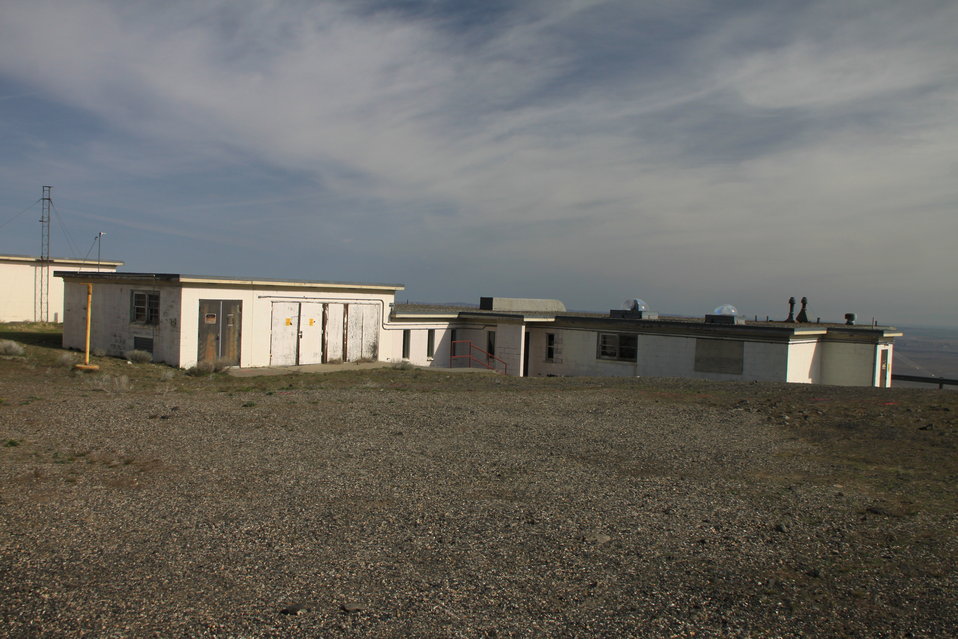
Stimulus funds cleanup of historical mountaintop at Hanford

The 6652-C Space Science Laboratory before demolition atop Rattlesnake Mountain at Hanford’s Arid Lands Ecology Reserve in Washington State. Over the years, the reserve supported various missions including anti-aircraft defense for the U.S. Army, telephone and radio communications, and wildlife reserve and environmental research.